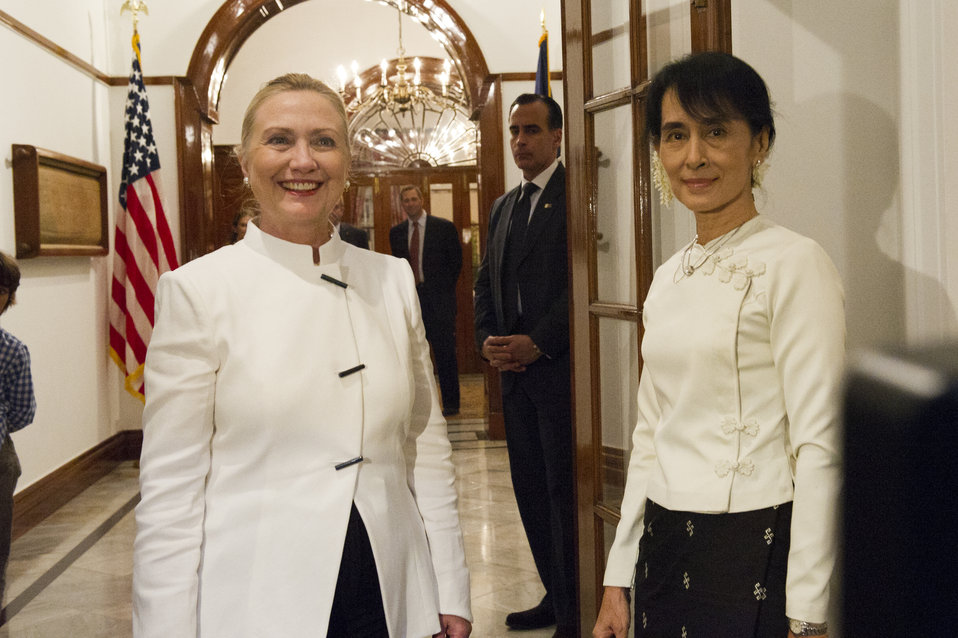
Secretary Clinton Meets With Daw Aung San Suu Kyi

U.S. Secretary of State Hillary Rodham Clinton meets with Daw Aung San Suu Kyi in Rangoon, Burma, on December 1, 2011.